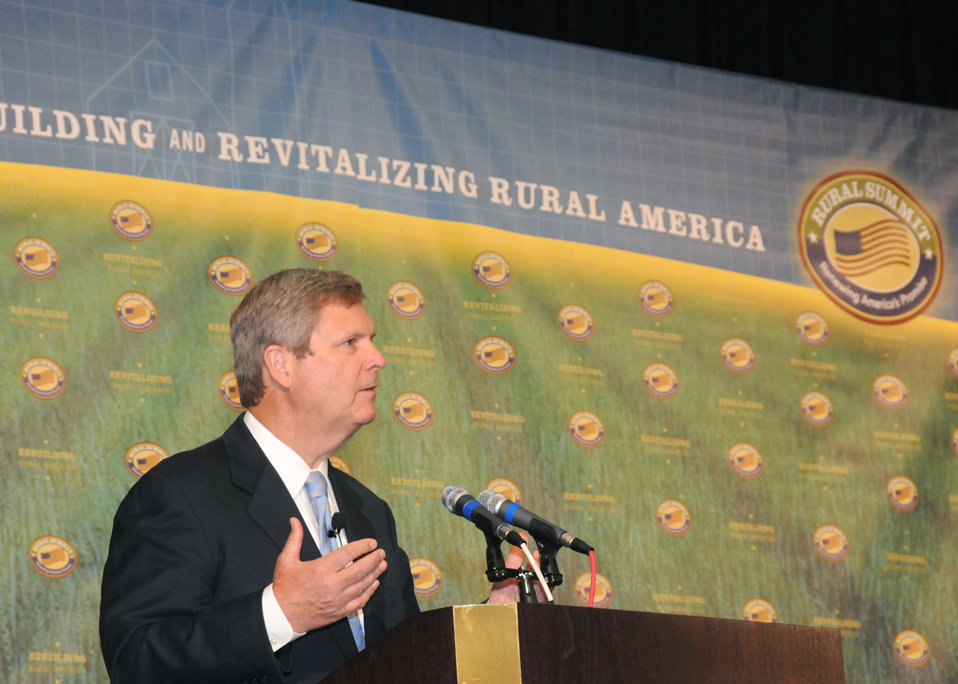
Agriculture Secretary Tom Vilsack speaks at the opening session of the National Rural Summit held at Jefferson College in Hillsboro, MO., on Thursday, June 3, 2010. USDA photo 10di1386-55